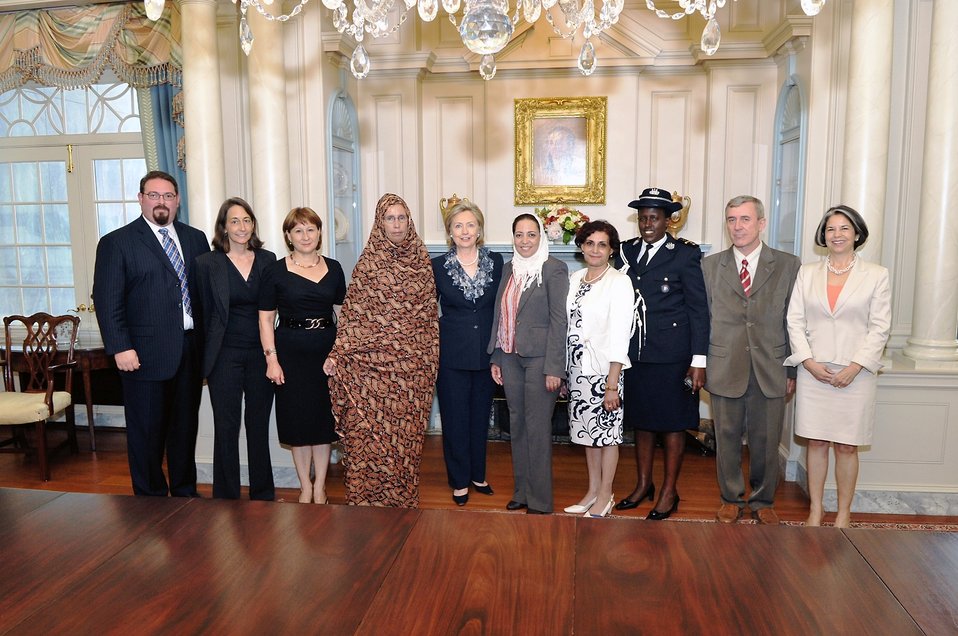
Ambassador CdeBaca, Secretary Clinton, and Under Secretary Otero With TIP Honorees

U.S. Secretary of State Hillary Rodham Clinton poses for a photo with Ambassador Luis CdeBaca (far left), Under Secretary for Democracy and Global Affairs Maria Otero (far right), and individuals honored for devoting their lives to the fight against human trafficking. The honorees attended the ceremony for the release of the 2010 Trafficking in Persons Report at the U.S. Department of State in Washington, D.C., on June 14, 2010.